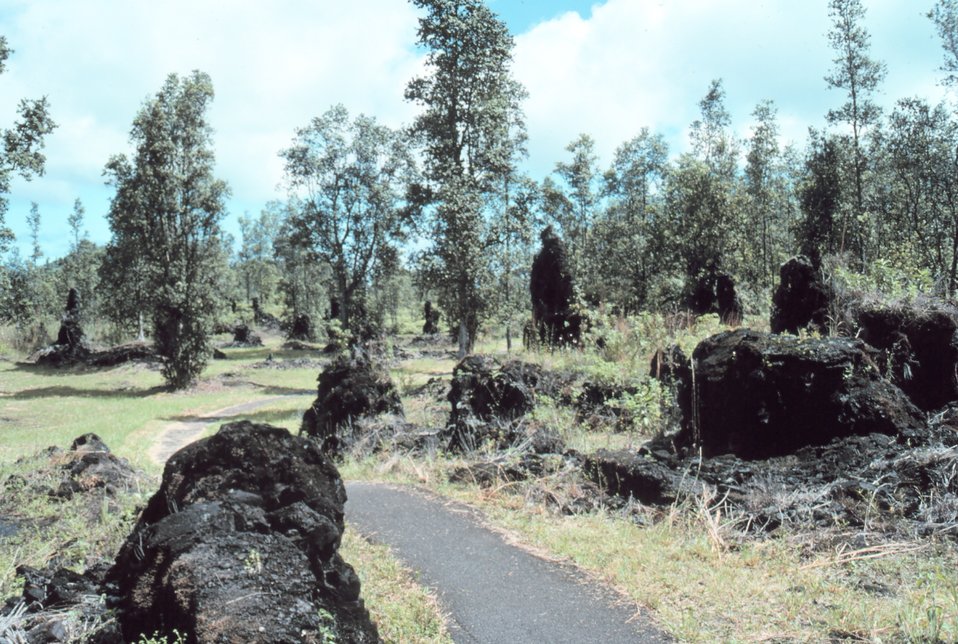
'Lava trees' formed when lava cools around tree trunks are quite tall.